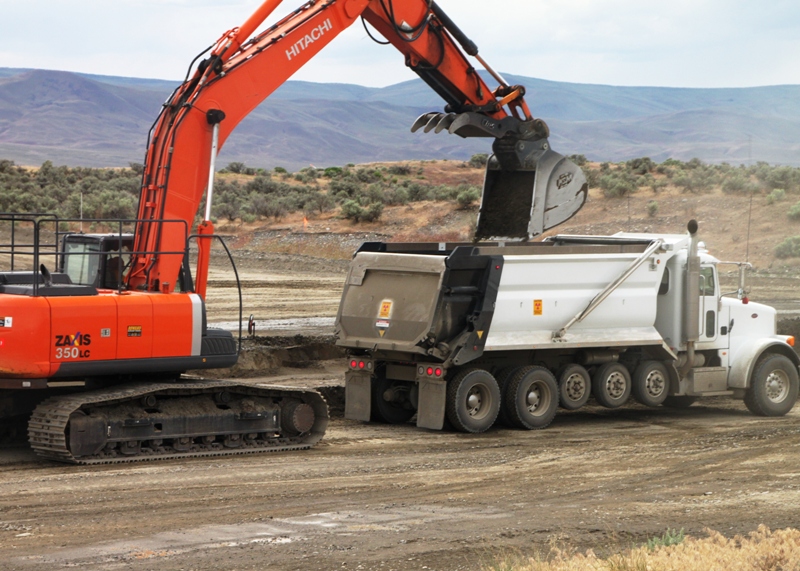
Recovery Act Workers Remediate and Restore Former Waste Sites

Contaminated soil being unloaded into a super dump truck, June 2010.